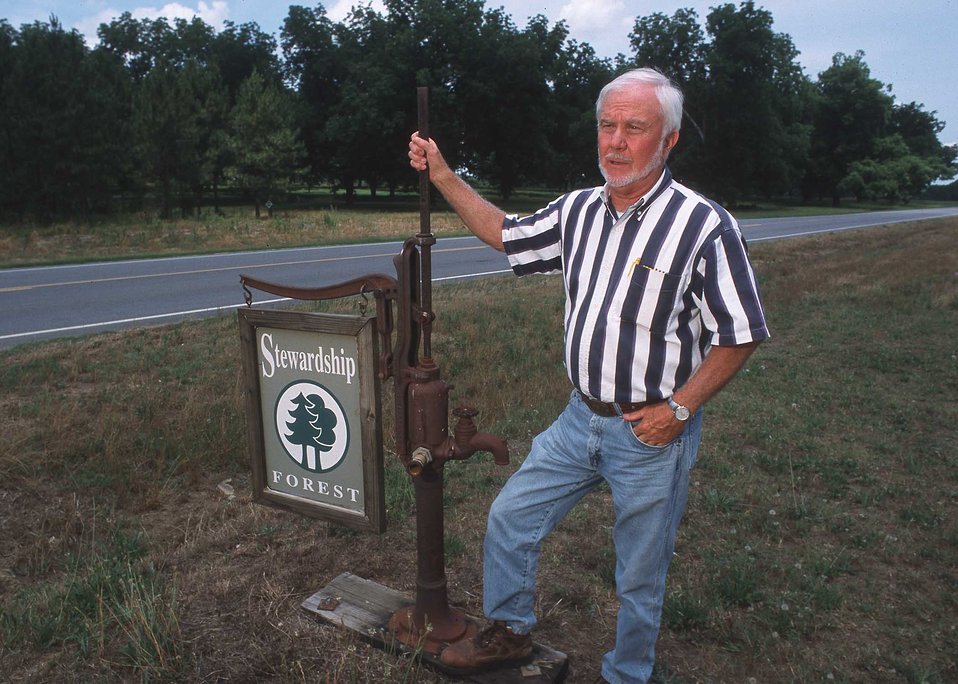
This Vienna County landowner has worked with NRCS to implement a holistic conservation approach to his land.